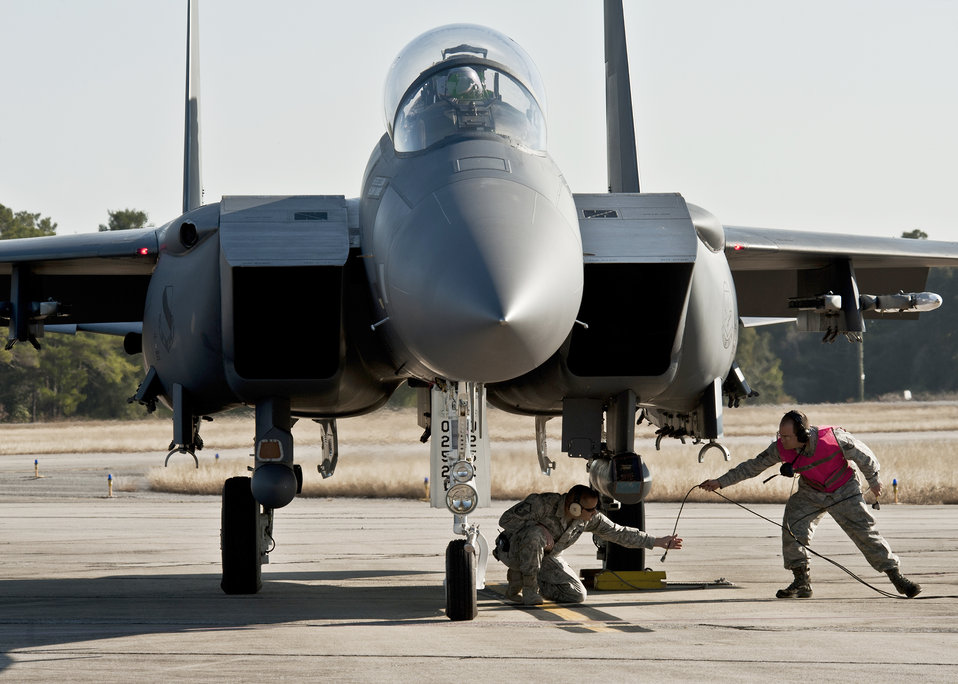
F-15E Strike Eagles get new radar

F-15E Strike Eagle maintainers perform final checks before takeoff Jan. 18, 2011, from Eglin Air Force Base, Fla. This F-15E is equipped with the new APG-82 radar, which replaces the 24-year-old APG-70 radar system. The maintainers are assigned to the 46th Maintenance Group.